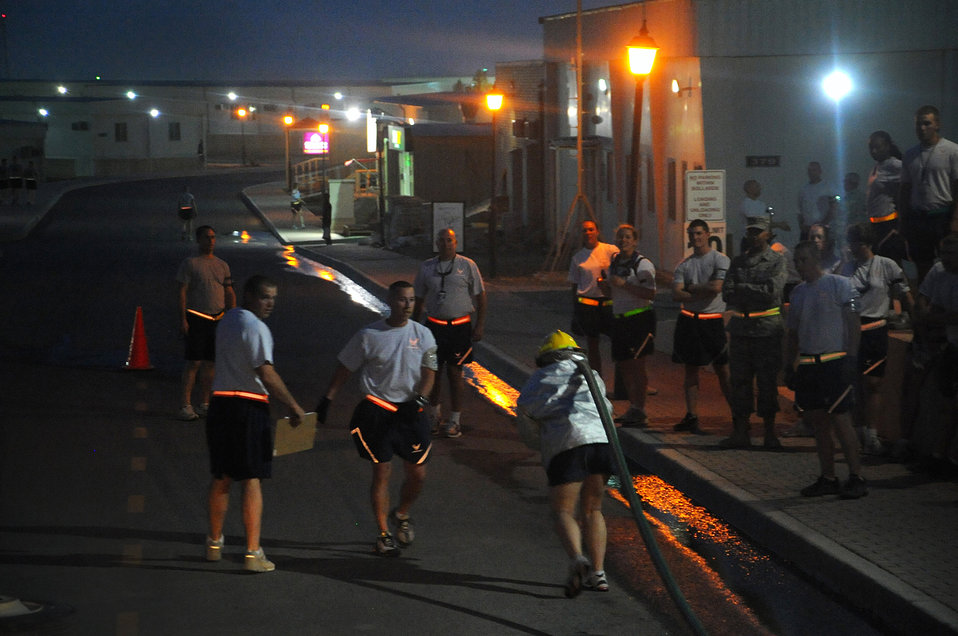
Firefighter challenge

An Air Force firefighter competes in the hose advance event while his fellow firefighters cheer him on May 28, 2011, during a firefighter challenge in Southwest Asia. The challenge featured multiple events, including tool carry, equipment hoist, dummy carry, hose advance, tire strike and hose pack carry.